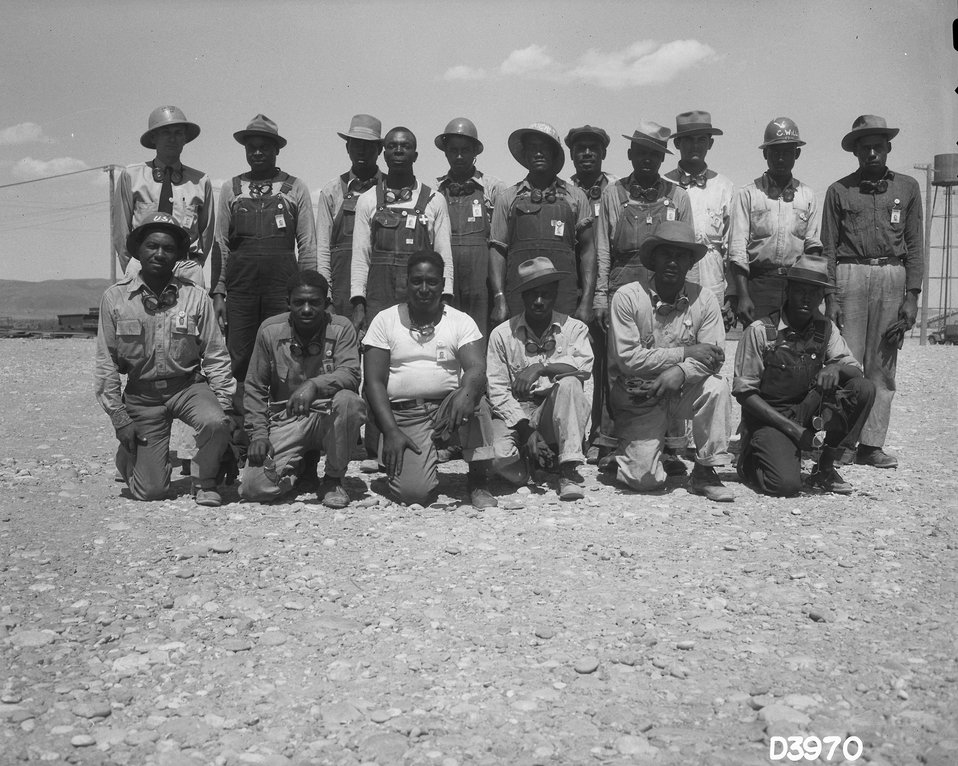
Group Shot

DOE commissioned an exhibit documenting the contributions of African Americans to the Manhattan Project in 2002. The purpose of the exhibit was to commemorate the role of African Americans to the Manhattan Project by way of the Hanford Reservation. The exhibit consists of pictures taken from the Hanford archives and oral histories of African American working at the Hanford starting with wartime emergency construction in 1943, through operations, cold war expansions, and mission diversification.